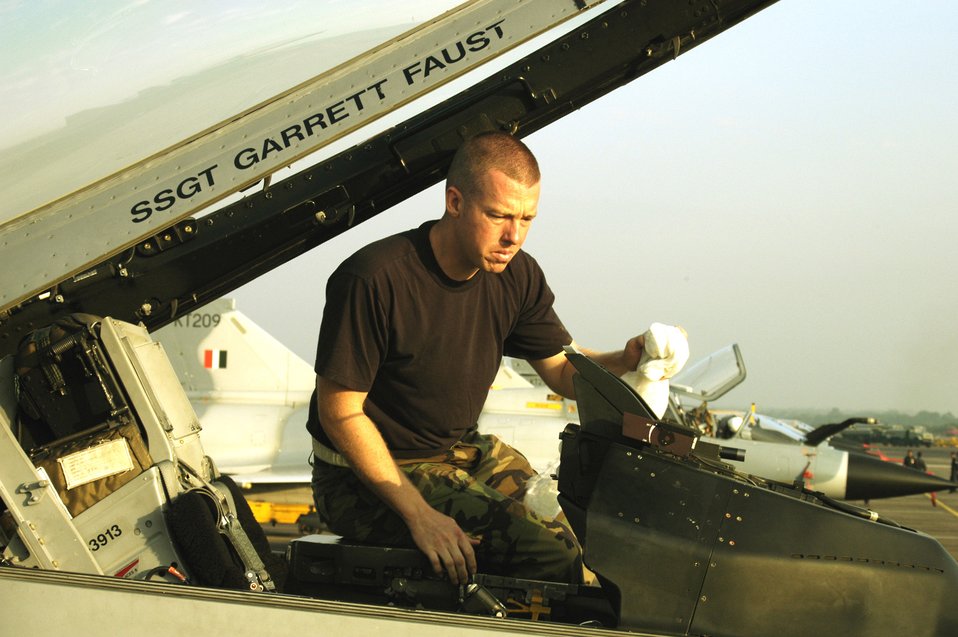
Cope India 06

KALAIKUNDA AIR STATION, India (AFPN) -- Crew chief Staff Sgt. Garrett Faust cleans the heads up display on his the F-16 Fighting Falcon here. The Falcons are flying dissimilar air combat sorties against Indian Mirage fighters -- like in the background -- and other aircraft during exercise Cope India 06, which ends Nov. 19. The sergeant is from the 35th Aircraft Maintenance Squadron at Misawa Air Base, Japan.